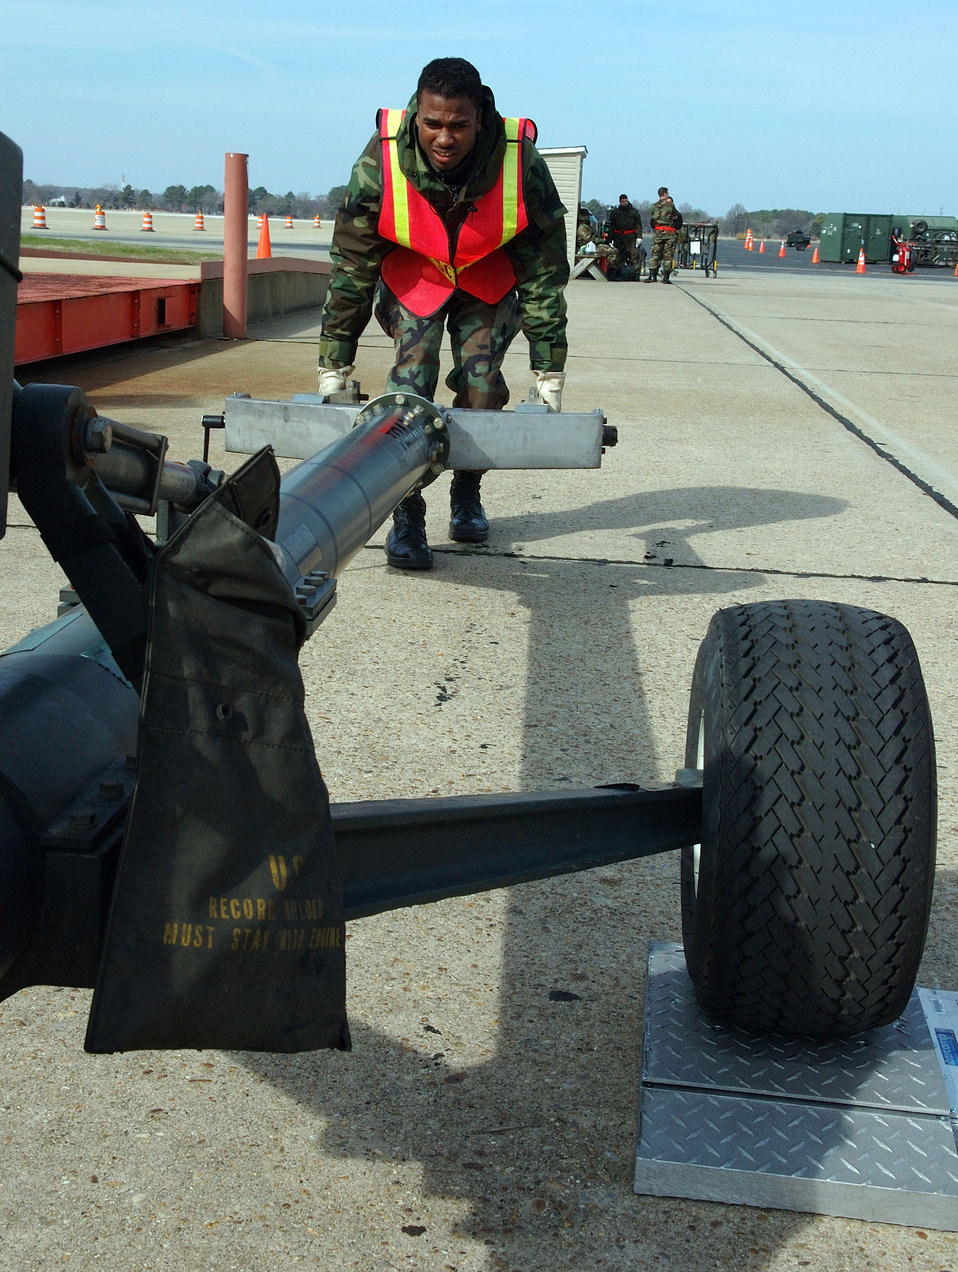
Phase 1 ORE

LANGLEY AIR FORCE BASE, Va. (AFPN) -- Airman 1st Class Jamal Huntley pushes a piece of mobile equipment during the Phase 1 operational readiness exercise. The Phase 1 ORE is an evaluation of the 1st Fighter Wing's ability to prepare and deploy personnel, equipment and support assets to a combat environment. Airman Huntley is with the base's ability to prepare and deploy personnel, equipment and support assets to a combat environment. Airman Huntley is with the 1st Component Maintenance Squadron.